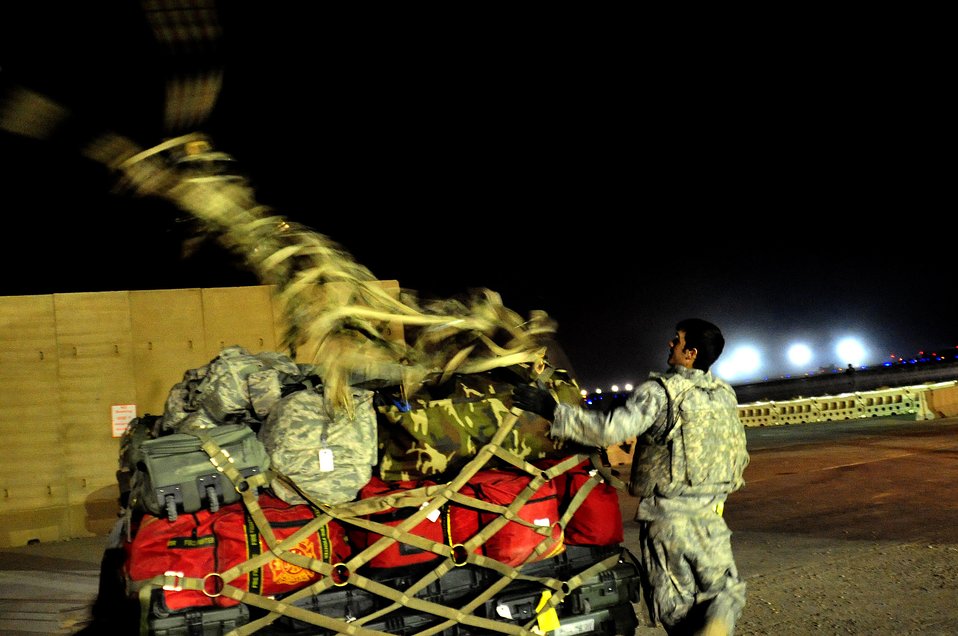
Last Airmen flying out of Iraq

An 407th Air Expeditionary Wing aerial porter prepares the last pallet to be transported out of Ali Air Base, Iraq, Dec. 18, 2011. A group of Airmen were the last service members to redeploy from Iraq based on the Iraq and U.S. 2008 Security Agreement that required all U.S. service members to be out of the country by Dec. 31.